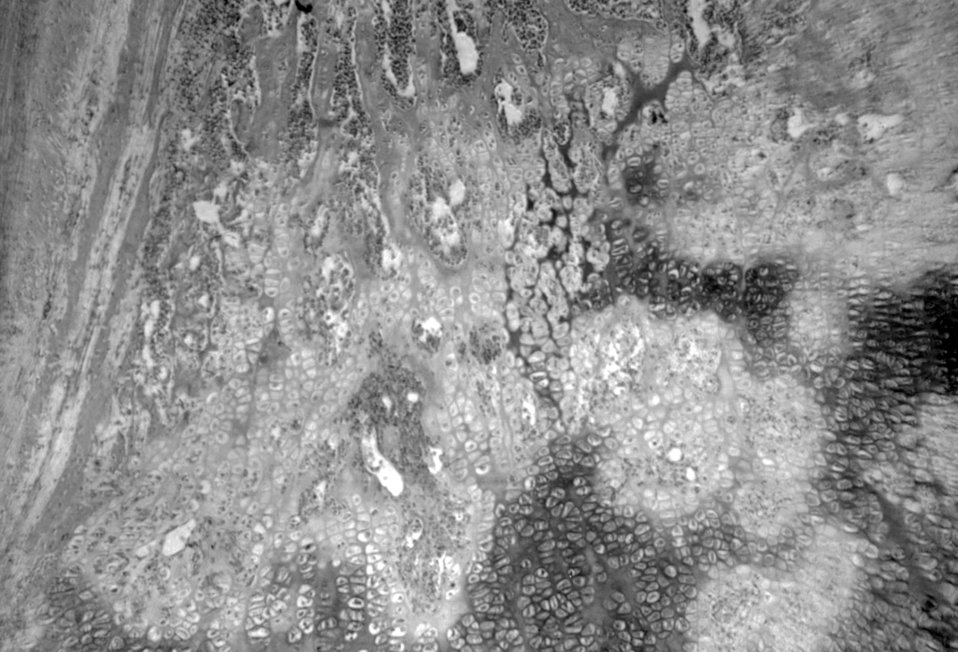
A photomicrograph of osteochondritis revealing the cytoarchitectural changes due to congenital syphilis.